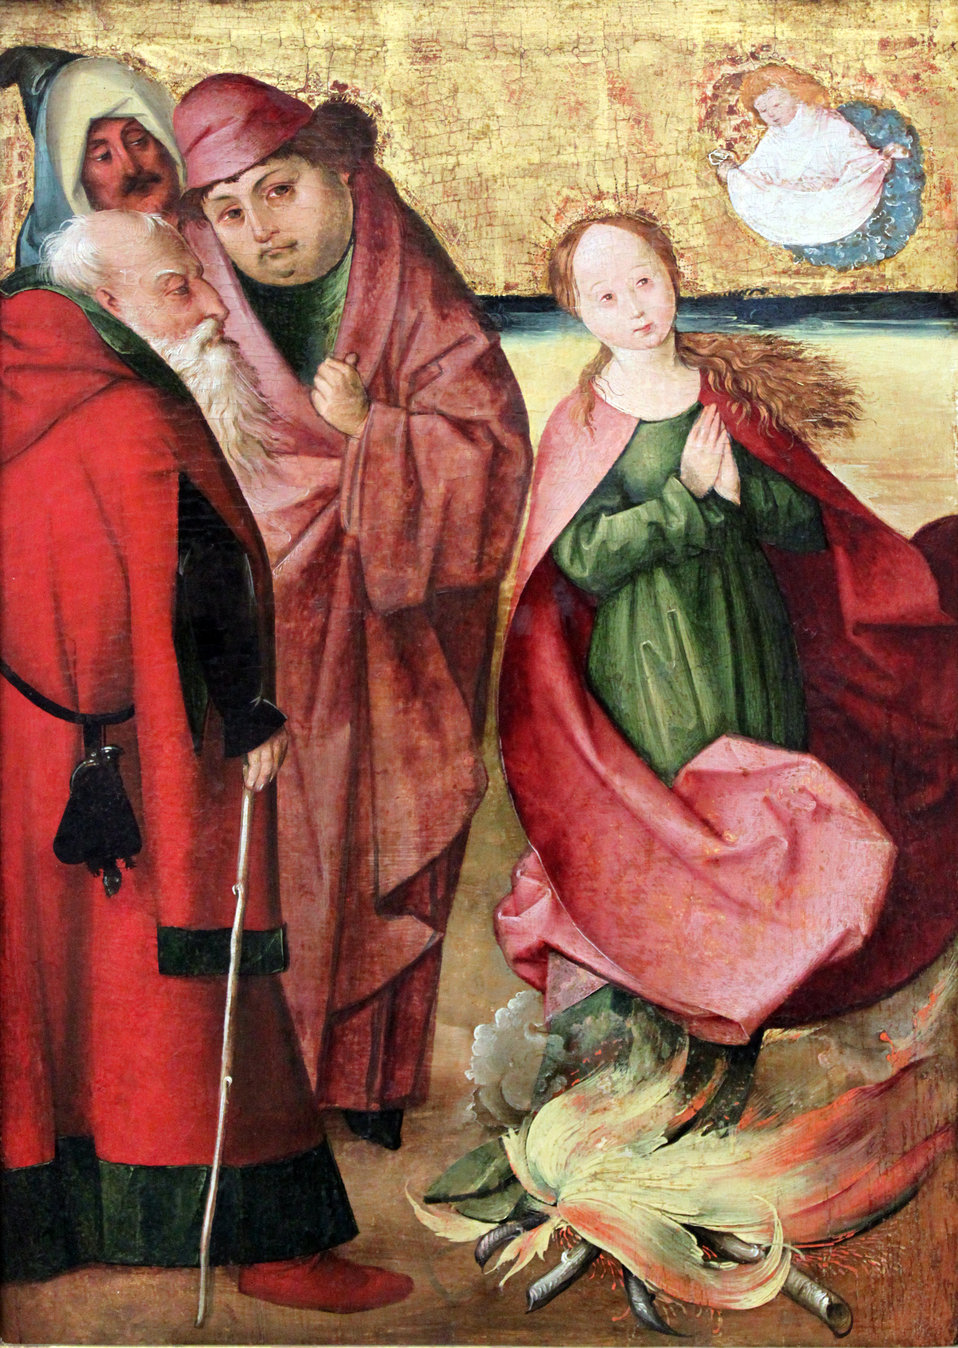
1510 Heilige Apollonia im Feuer anagoria